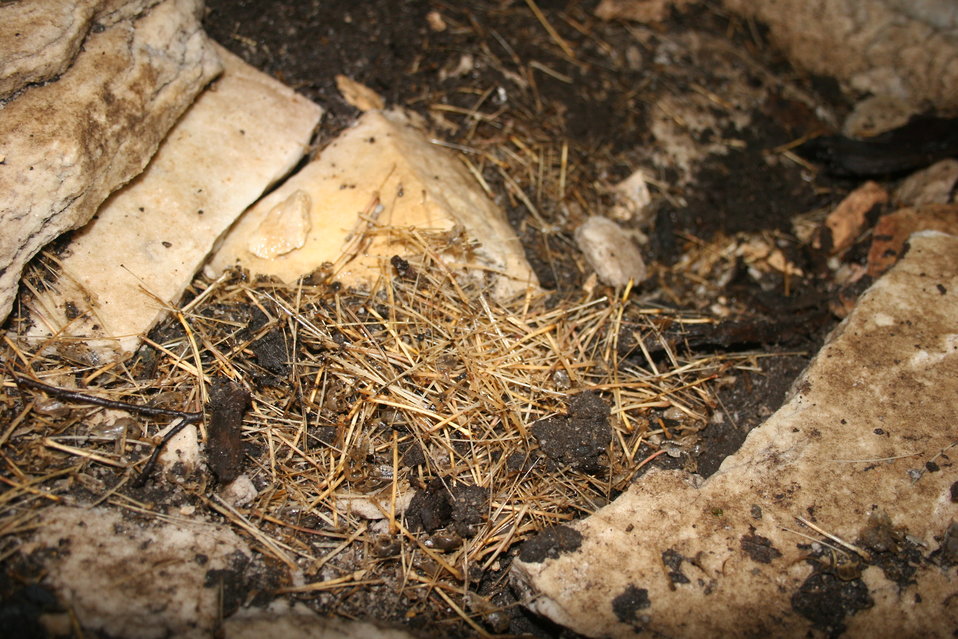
Piles of bat bones in Mt. Aeolus Cave